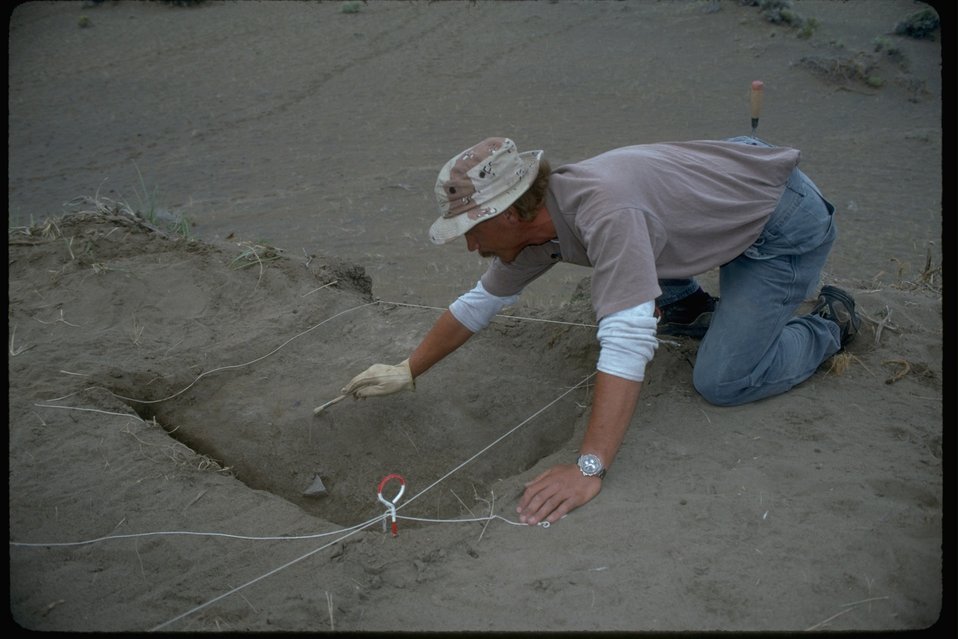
Archaeological excavation at Skull Creek Dunes site in Catlow Valley of Southeastern Oregon.